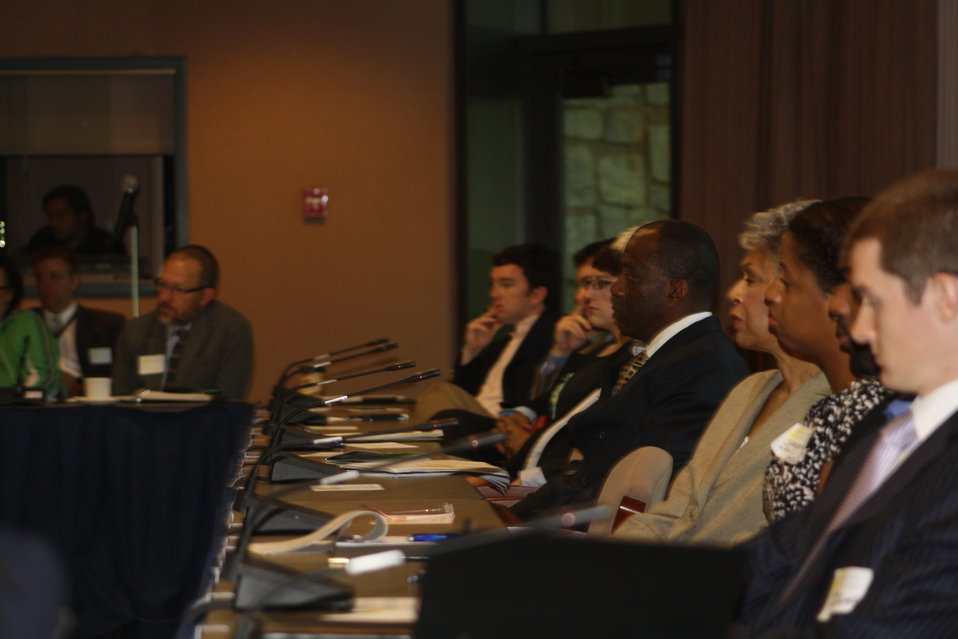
Faith-Based and Neighborhood Partnership launch at Atlanta's Carter Center